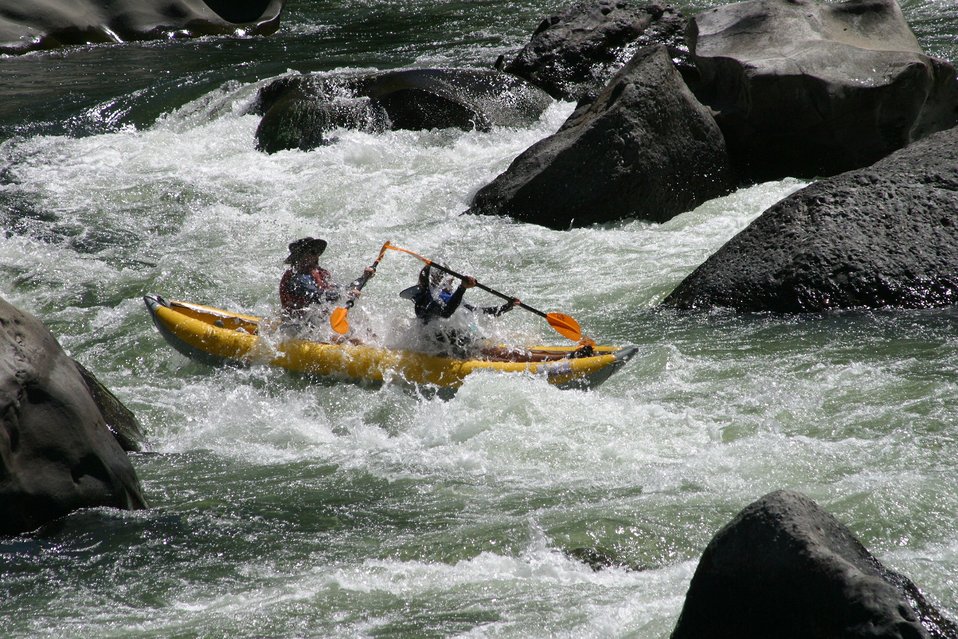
Boaters negotiate Blossom Rapids.